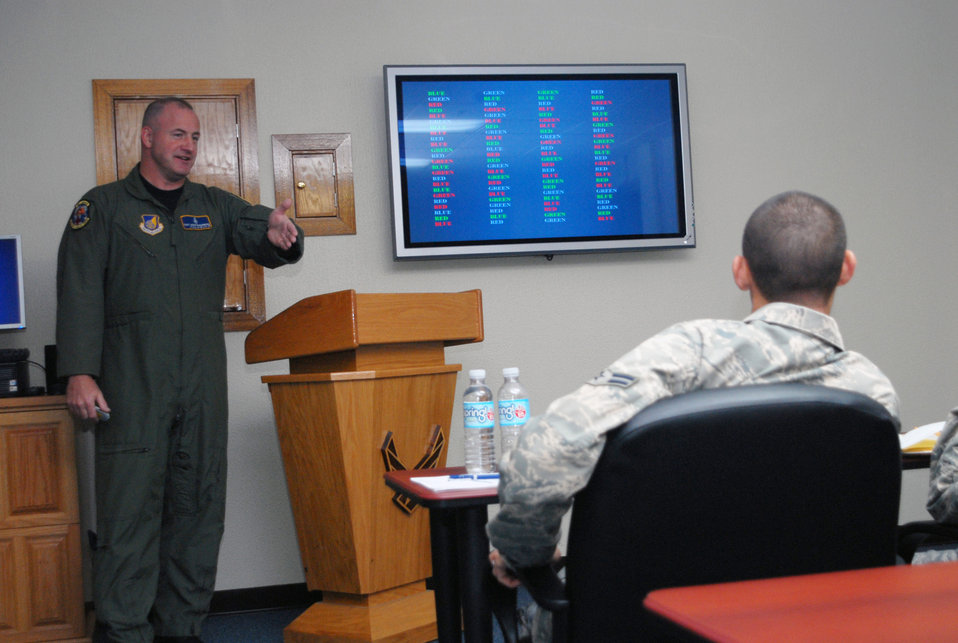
Human performance training optimizes Airmen

Tech. Sgt. Adam Rosenberg uses colored words July 16 to show Airmen at Kadena Air Base's First Term Airmen's Center the difference between instinctive and cognitive reasoning. The briefing, is used to teach Airmen about situational awareness, is part of the Human Performance Training Team instruction. Sergeant Rosenberg is the 18th Aerospace Medicine Squadron NCO in charge of operations.